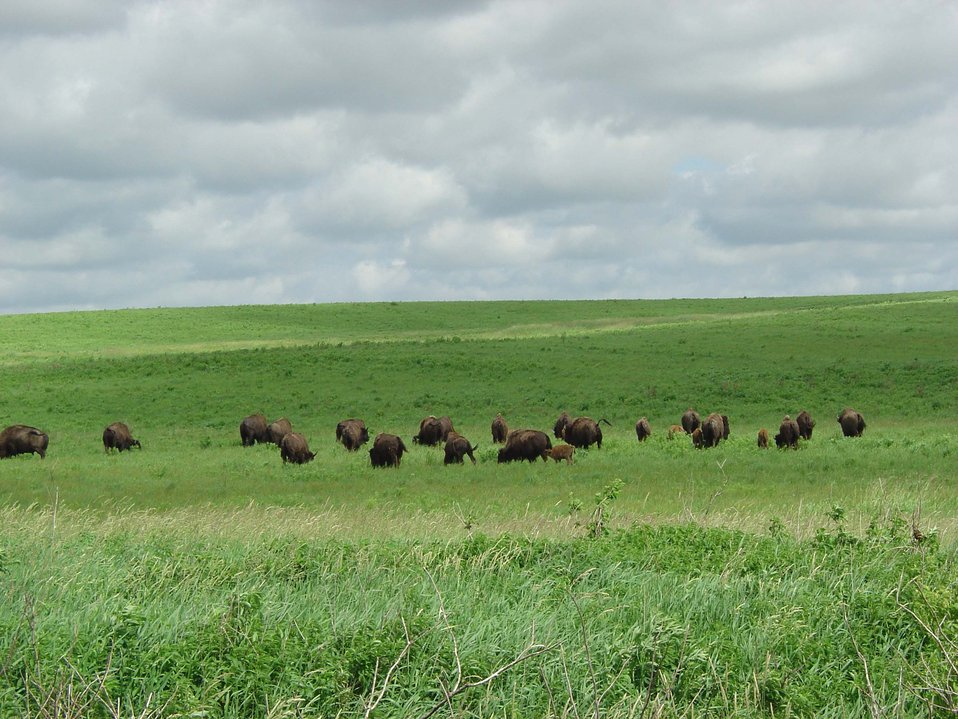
Bison herd grazing in open prairie beneath cloudy sky.